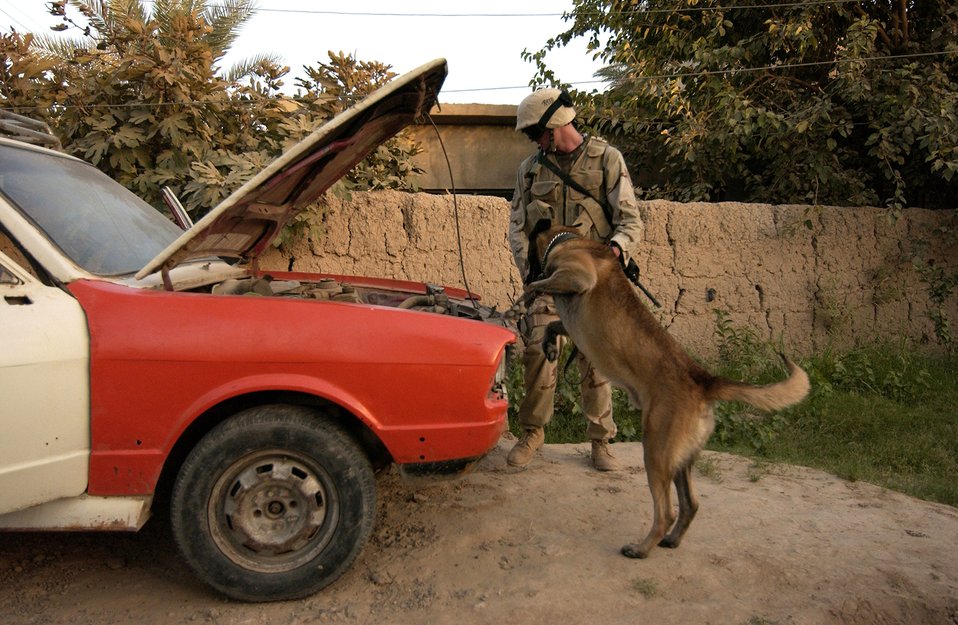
Hidden devices

IRAQ -- Staff Sgt. James Richey Jr. walks Jacco around a vehicle with suspected hidden improvised explosive devices. Sergeant Richey is deployed from the 96th Security Forces Squadron at Eglin Air Force Base, Fla.